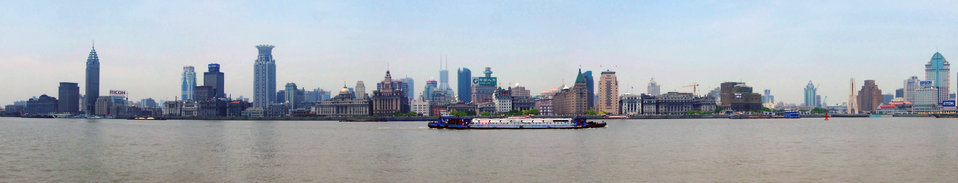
Deutsch: Beschreibung: Panorama des Bund (Shanghai)